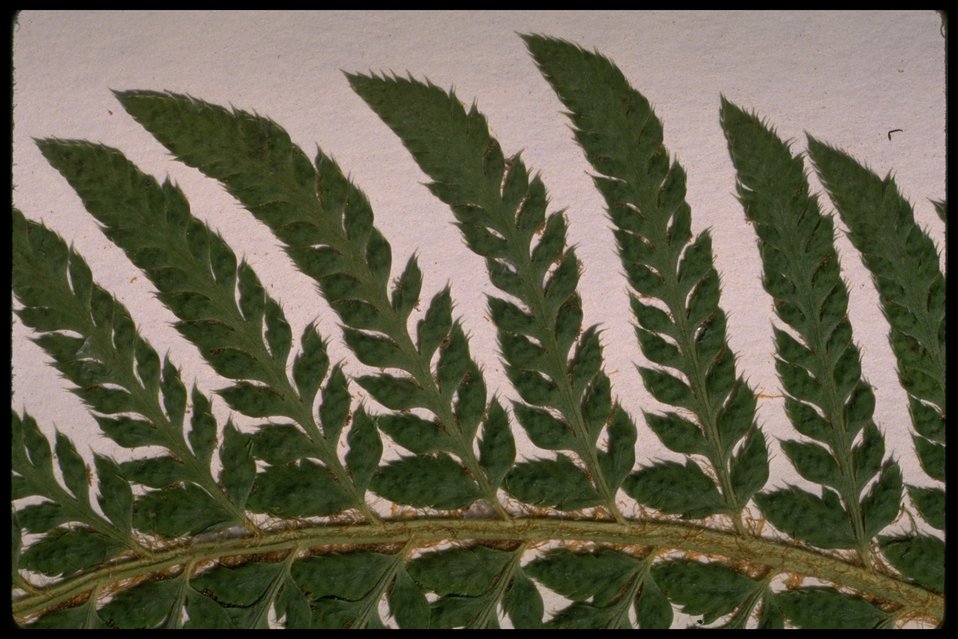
Polystichum californicum, commonly known as California Sword Fern.